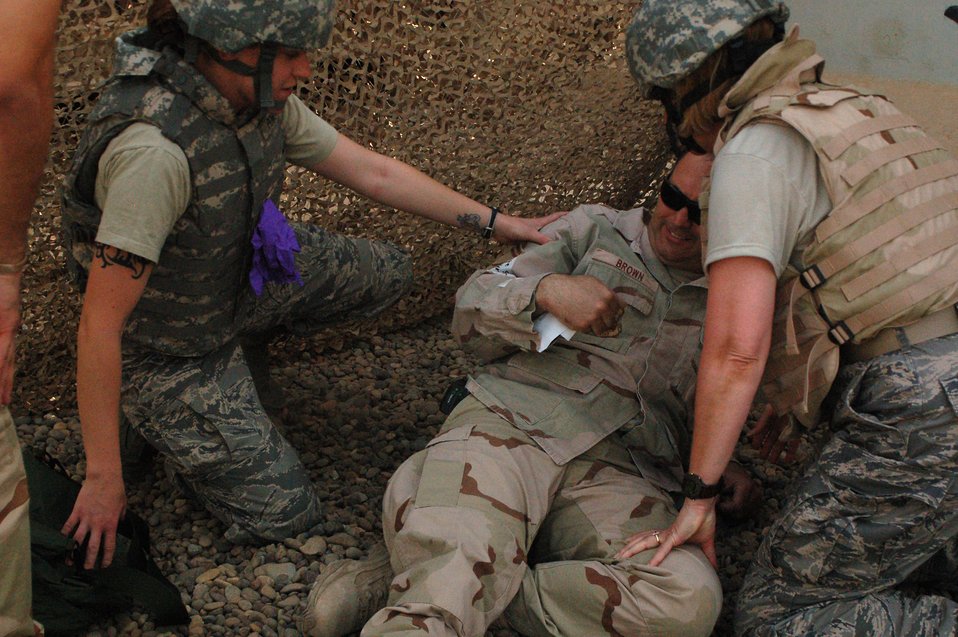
Sather medics prepare for worst,

Staff Sgt. Jalayne Powers (left) and Lt. Col. Patricia Hartman assess the simulated injuries of Senior Master Sgt. Michael Brown March 21 at Sather Air Base, Iraq. The injuries are the result of a simulated unexploded oridence detination. The training teaches medical skills to non-clinical unit members. Sergeant Powers is a 447th Expeditionary Medical Squadron bioenvironmental engineer technician. Colonel Hartman is the chief administrator with the 447 EMEDS. Sergeant Brown is the 447th Expeditionary Civil Engineer Squadron's fire department fire chief.